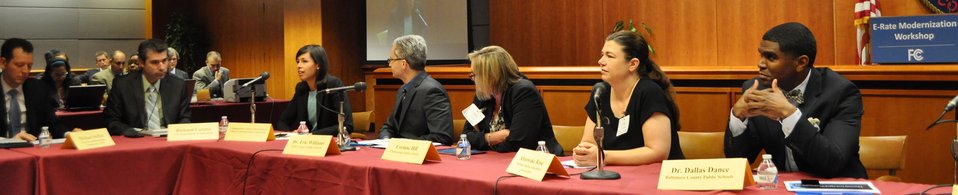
5.6.2014 E-Rate Modernization Workshop

Panel Discussion: Expanding Access to Wi-Fi for Schools and Libraries